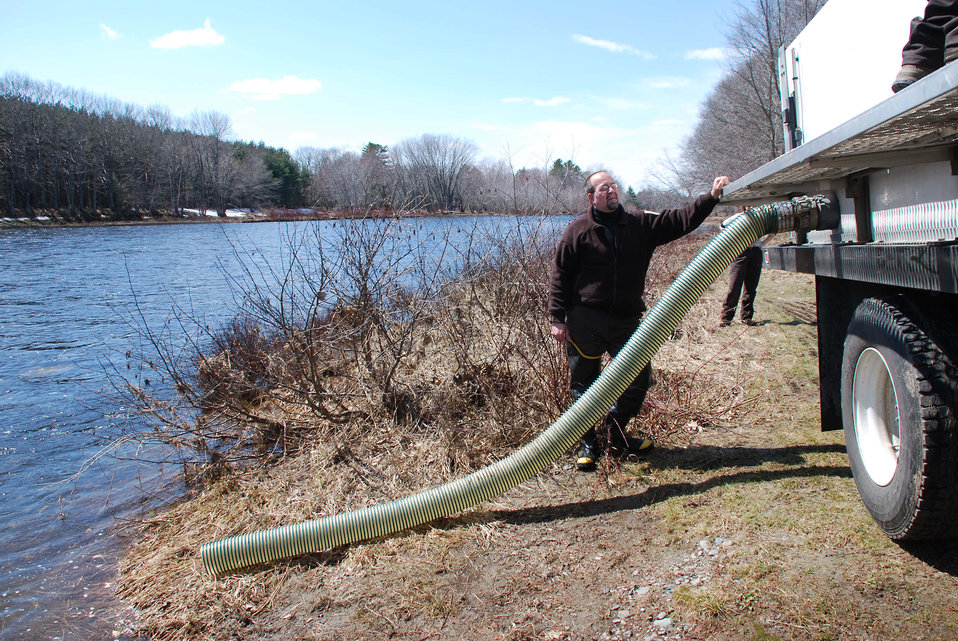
Hooking up the Discharge Hose

The quickest method of delivery for the fish from the truck to the river is with the use of a discharge hose. An entire truck, which on average can transport about 10,800 fish, can be unloaded in 10 minutes or less.